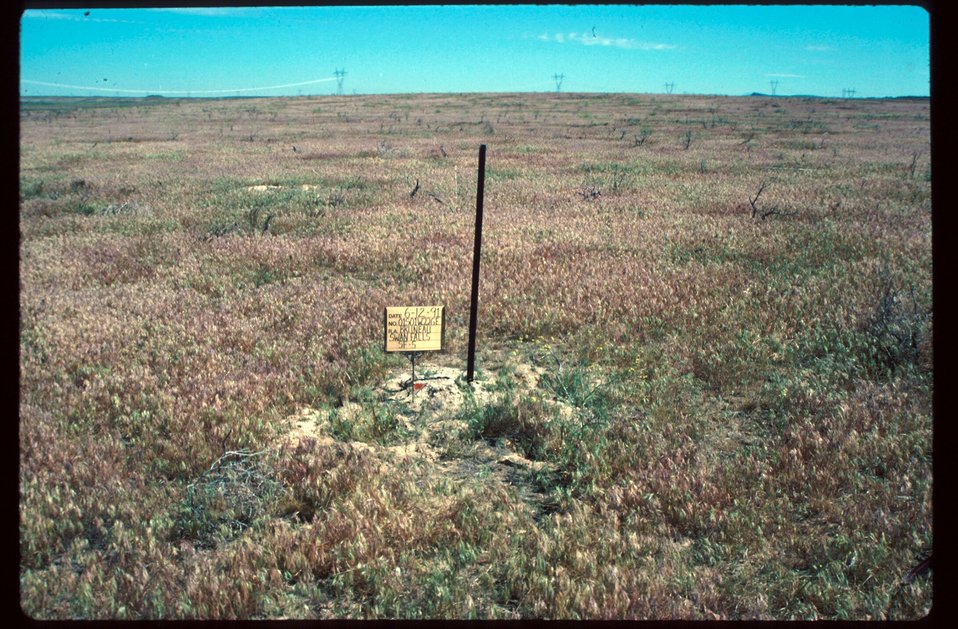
Monitoring Site Range Restoration Project